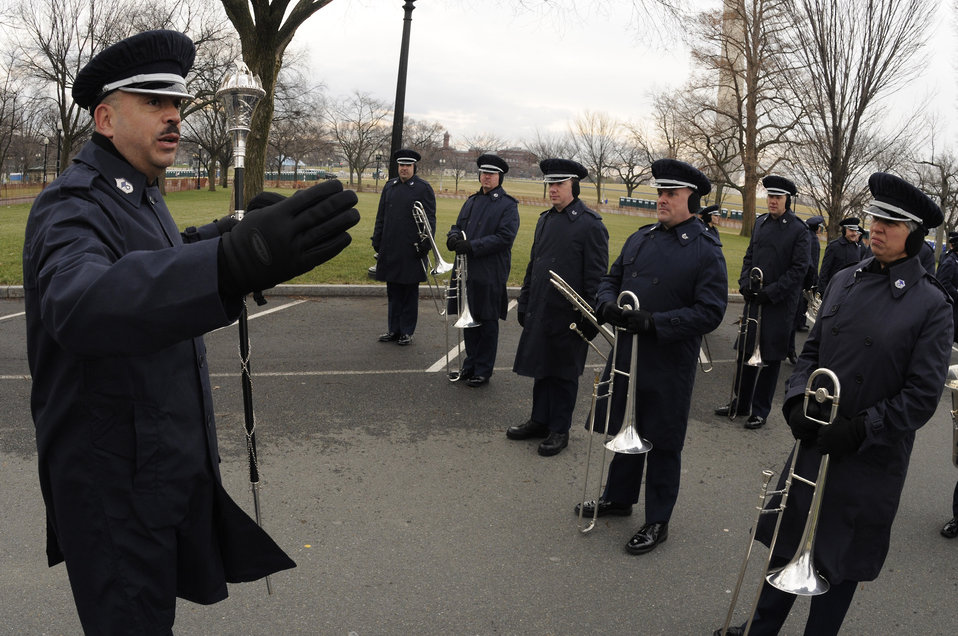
Practice makes perfect

Chief Master Sgt. Edward Teleky explains the spacing needed between elements for the Air Force Band flight before marching down Constitution Avenue during a practice run of the inauguration parade for President-elect Barack Obama Jan. 11 in Washington, D.C. Chief Teleky is the drum major and director of the Air Force Band's Ceremonial Brass.